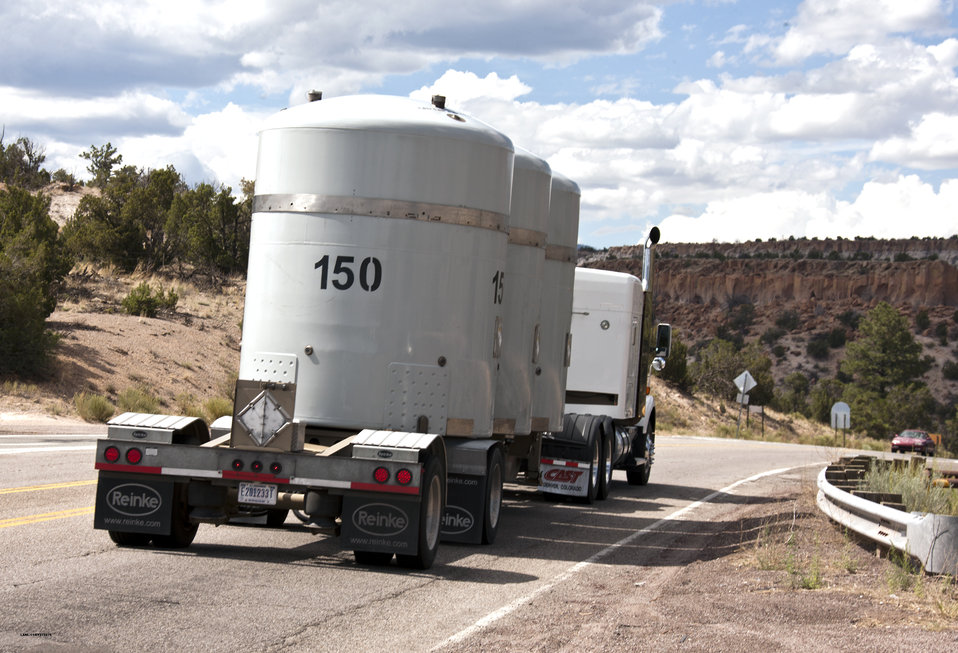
1000th Shipment of TRU Waste from LANL